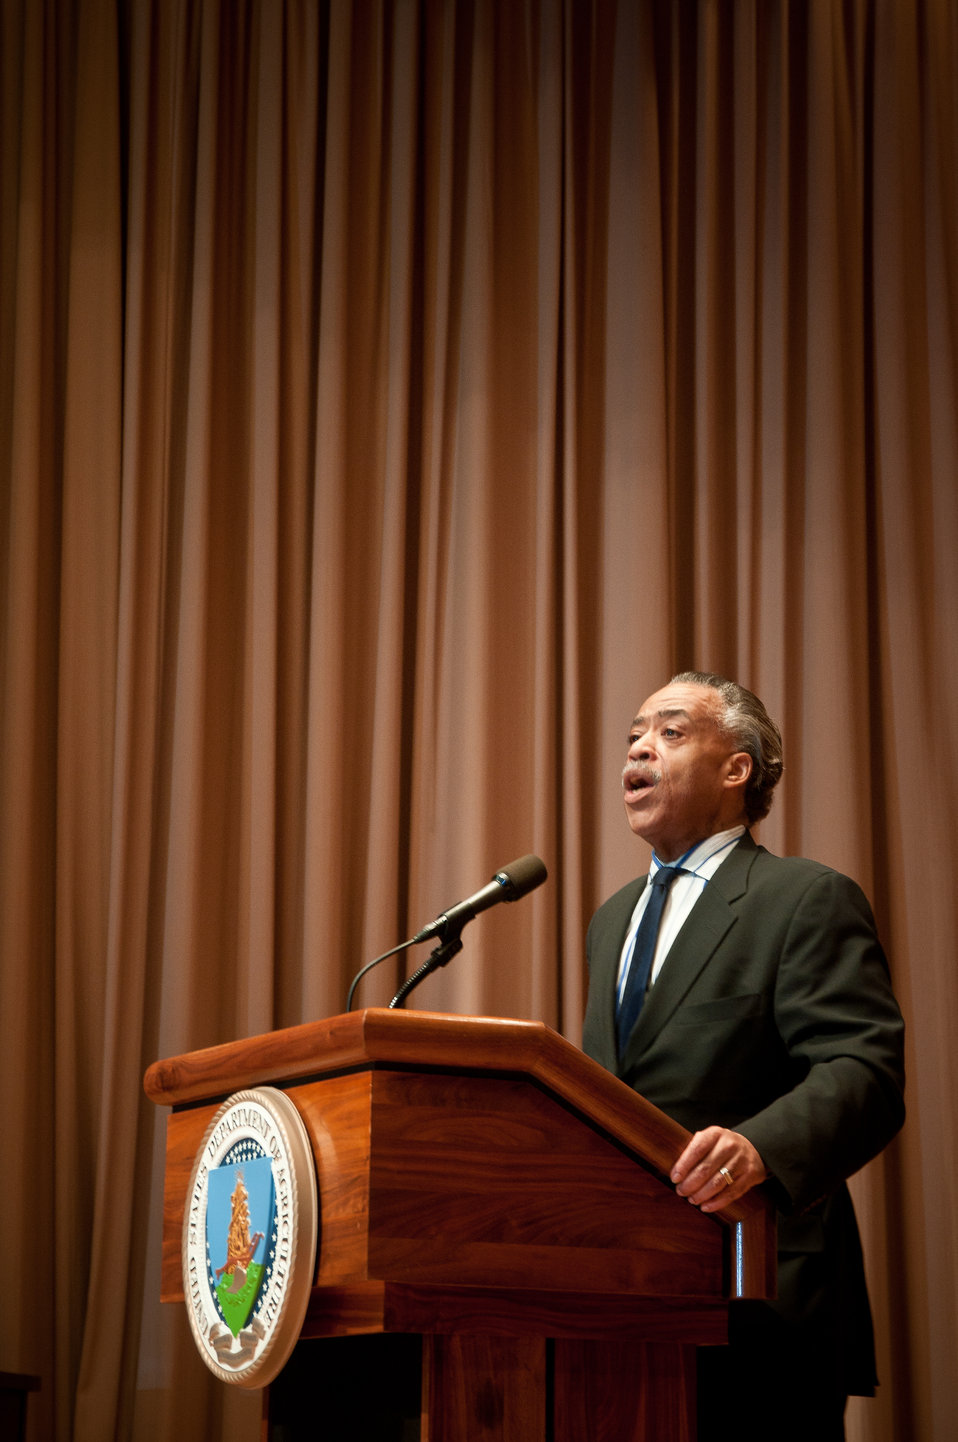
Reverend Al Sharpton, Jr. was the keynote speaker at the Department of Agriculture’s African American History Month Program, on Monday, February 28, 2011; in Washington, D.C. Rev. Sharpton’s topic was “Civil Rights in the Age of Obama.”